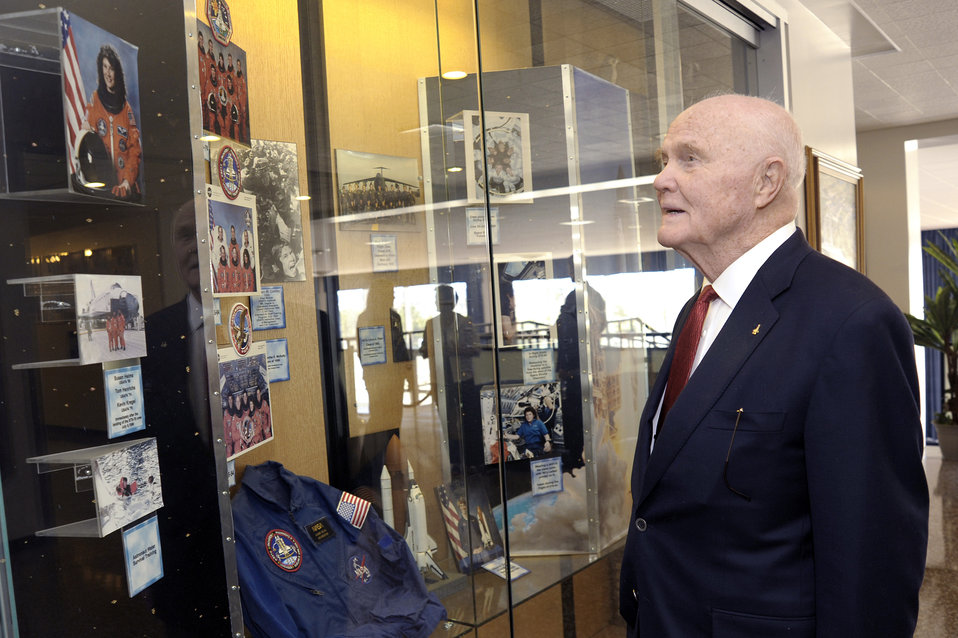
Academy honors Senator Glenn

Sen. John Glenn admires a display case April 22 featuring U.S Air Force Academy graduate Brig. Gen. Susan J. Helms. He was visiting the Academy to be honored as the recipient of the 2008 Thomas D. White National Defense Award.